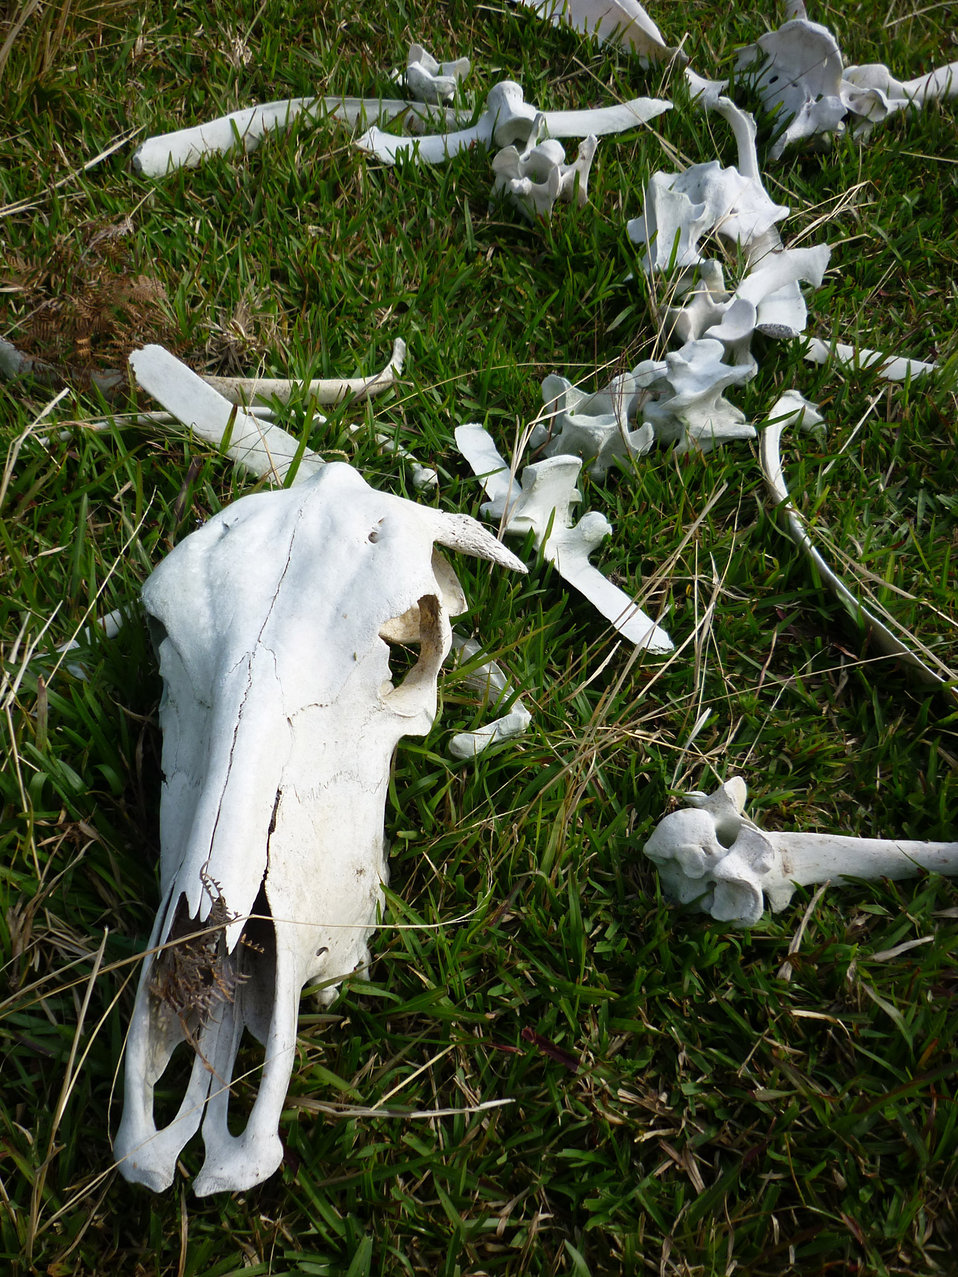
Cow skeleton

Cow skull and skeleton lie on green grass background.